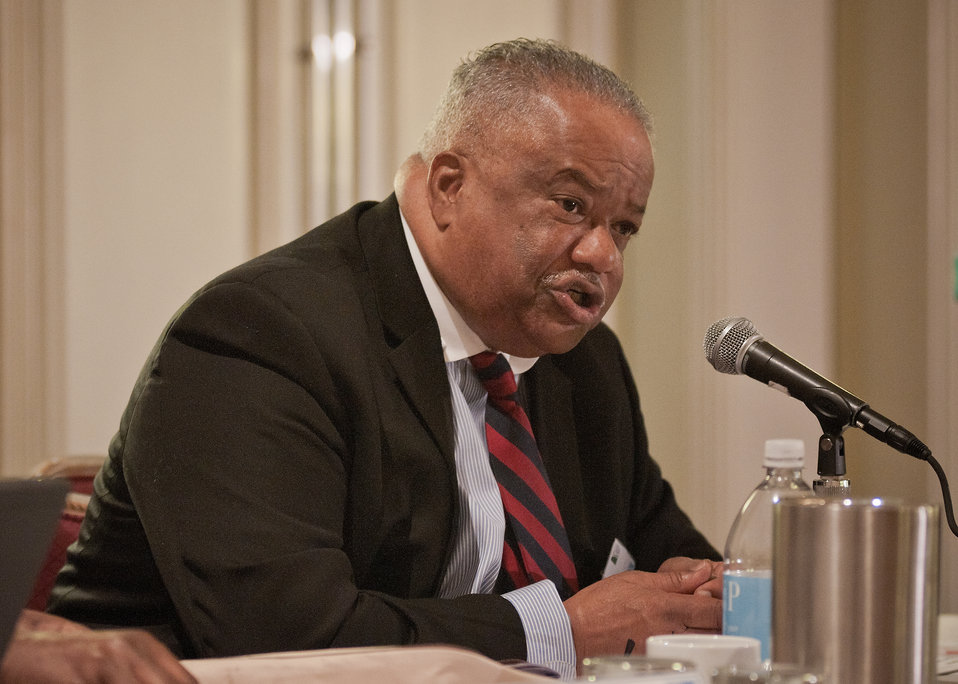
Ralph Paige, Executive Director, Federation of Southern Cooperatives/Land Assistance Fund East Point, Georgia spoke during the breakout session Innovative Solutions for Meeting the Challenges of Small and Disadvantaged Farmers at the 2012 Agricultural Outlook Forum, “Moving Agriculture Forward, Growing, Innovating and Celebrating 150 Years” held at the Crystal gateway Marriott Hotel Arlington, Virginia, Friday, February 24, 2012. The session illustrated the important role small and beginning farmers and ranchers have in agriculture.